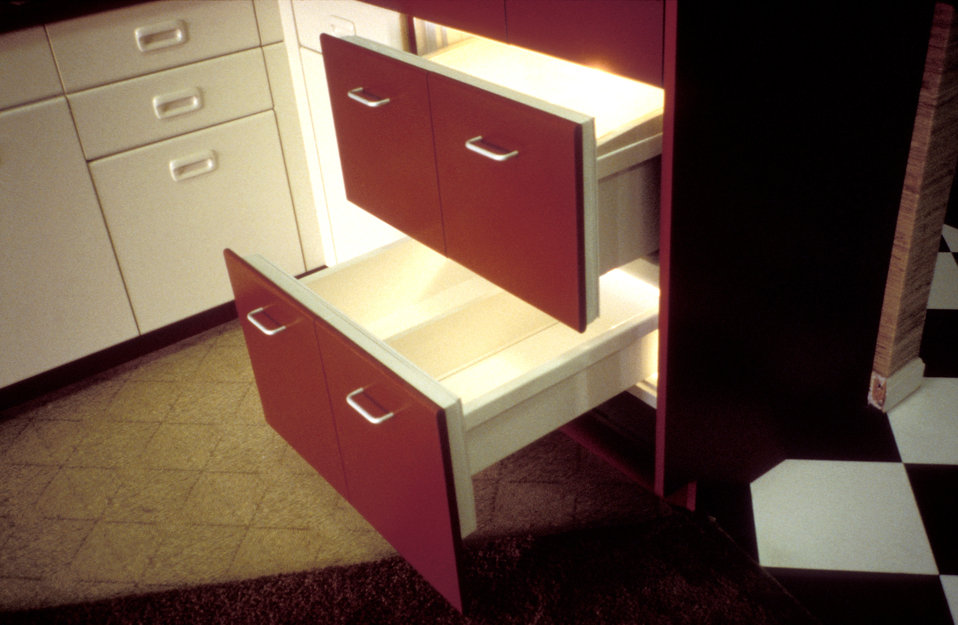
Designed in 1995, this universally-designed, refrigerator was equipped with back-lit drawers, which made it very convenient for mobility-impaired users, such as those seated in a wheelchair, to be able to access the drawer contents without having to perform awkward, or difficult body positioning. This appliance had the appearance of kitchen cabinetry and was lighted for easier viewing. By creating such universally accommodating designs, all users may benefit, which means those with, as well as those without mobility impairments.